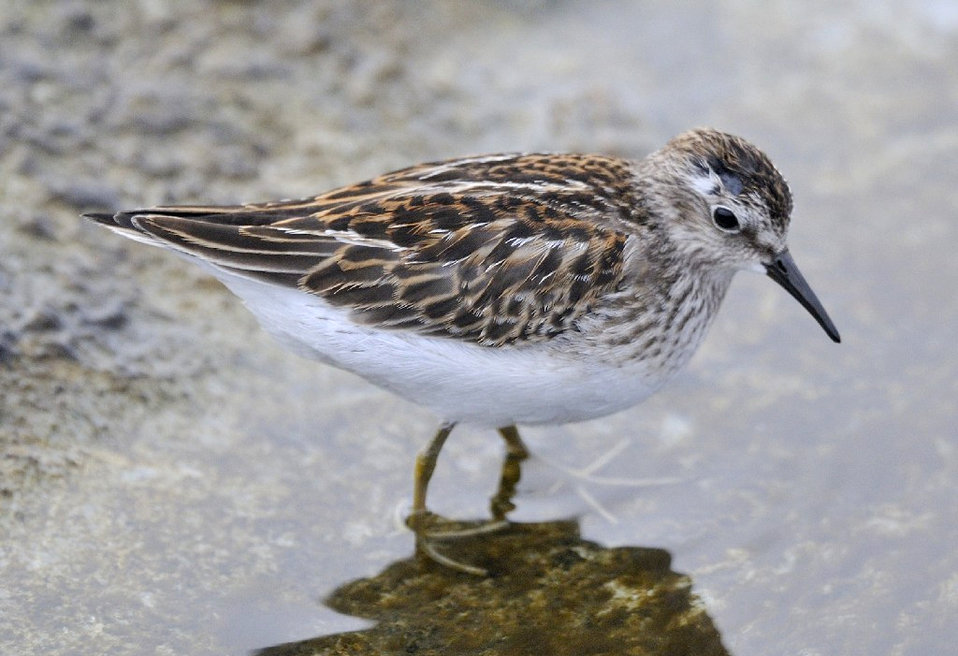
Photo of the Week - Least Sandpiper

Photo of the Week - 9/24/12

Least sandpiper photographed at Beavertail State Park in Jamestown, RI.